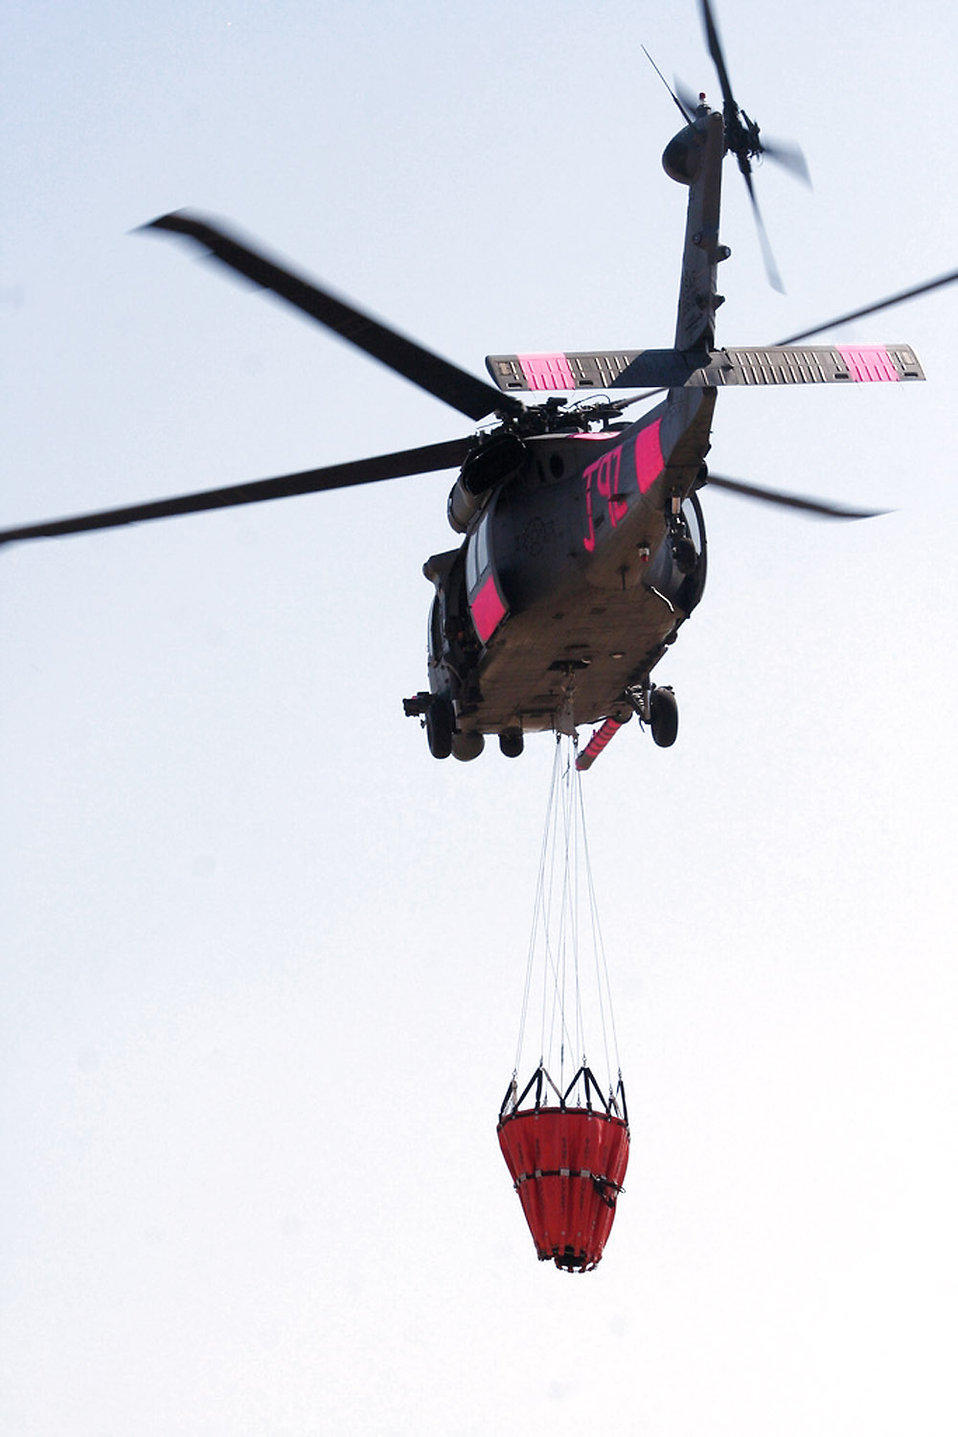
Fighting wildfires, saving lives

An HH-60G Pave Hawk flies with a water bucket attached July 2 near Sacramento, Calif. The aircrews trained with water buckets to become certified for firefighting suppression duty. The HH-60G is from the 129th Rescue Wing of the California Air National Guard.